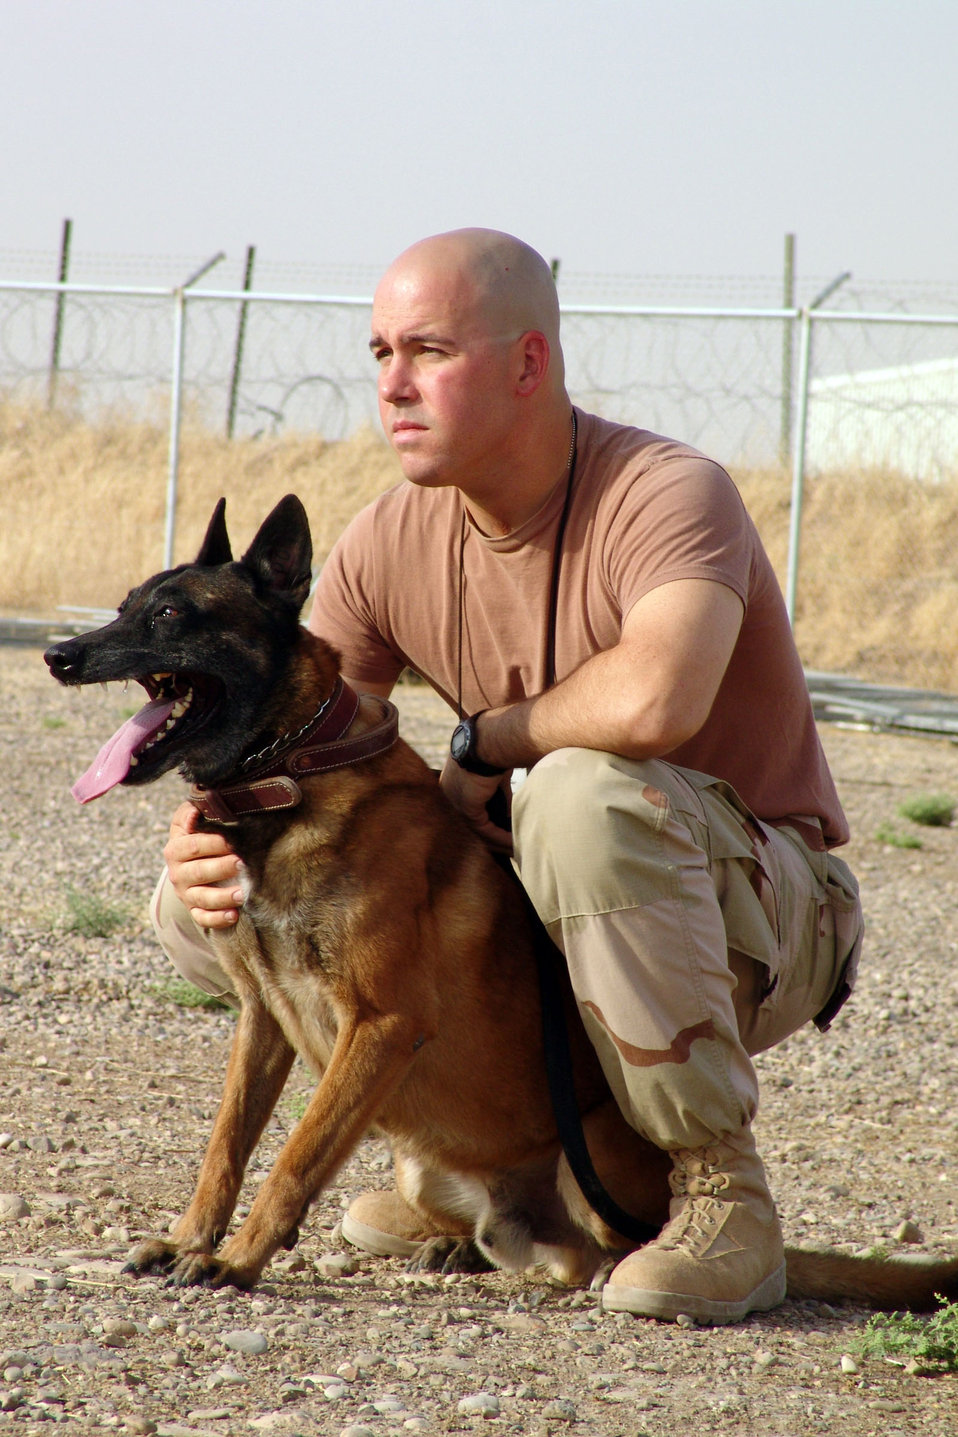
K-9 teams keep Kirkuk safe

KIRKUK AIR BASE, Iraq -- Staff Sgt. Joseph Crow and his military working dog, Rico, wait for the